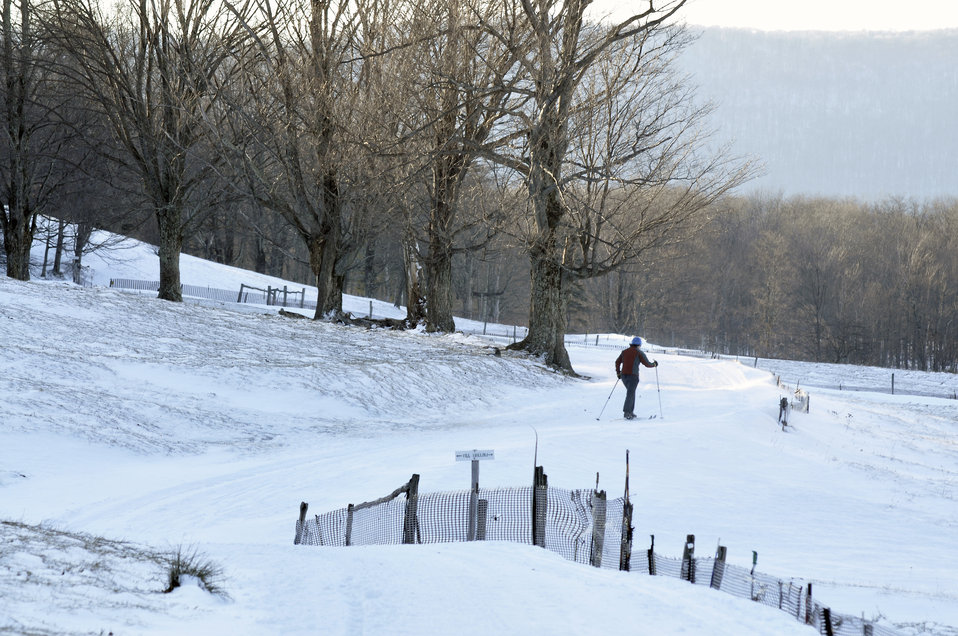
Visitors to the Monongahela National Forest in Davis, West Virginia enjoy Nordic walking on January 28, 2010. National Forests offer visitors access to a diversity of outdoor winter recreational opportunities such as skiing, ski jumping, fishing, and Nordic walking. Visitors can view wildlife, scenic vistas, and explore historic places.